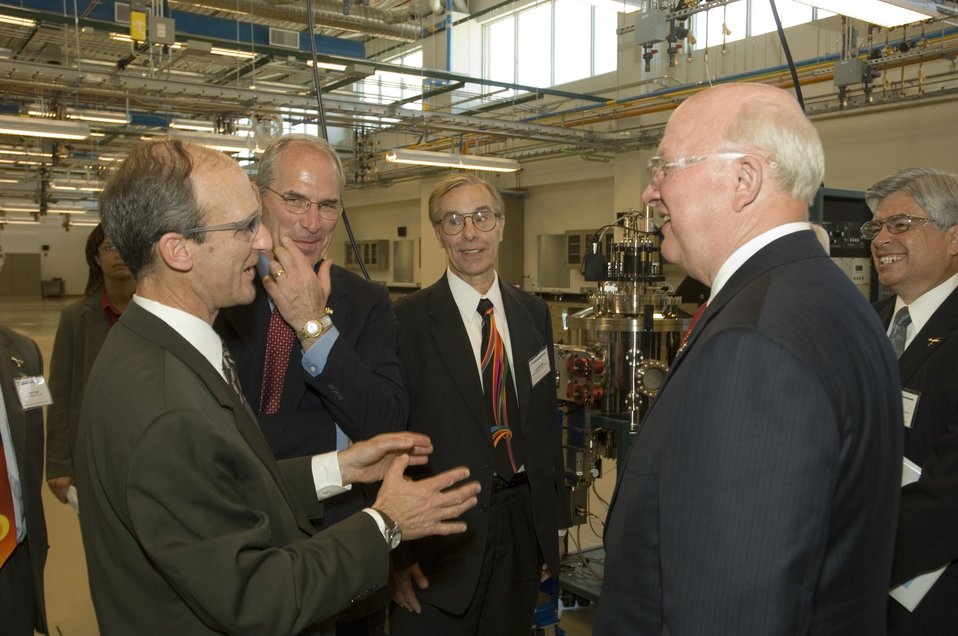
SECRETARY OF ENERGY SAMUEL BODMAN VISITS NREL FOR THE RIBBON CUTTING CEREMONY TO OFFICIALLY OPEN DOE NATIONAL RENEWABLE ENERGY LABORATORY'S SCIENCE AND TECHNOLOGY FACILITY.

SECRETARY BODMAN TOURS THE NREL'S SCIENCE AND TECHNOLOGY FACILITY, PROCESS DEVELOPMENT INTEGRATION LABORATORY (PDIL). IT OFFERS A NEW CLASS OF TOOLS FOR THIN-FILM PHOTOVOLTAIC DEPOSITION, PROCESSING, AND CHARACTERIZATION. THE RESEARCHERS CAN PASS SAMPLES BETWEEN LAB EQUIPMENT IN A CONTROLLED ENVIRONMENT, AVOIDING CONTAMINATION AND SPEEDING THE RESEARCH PROCESS.